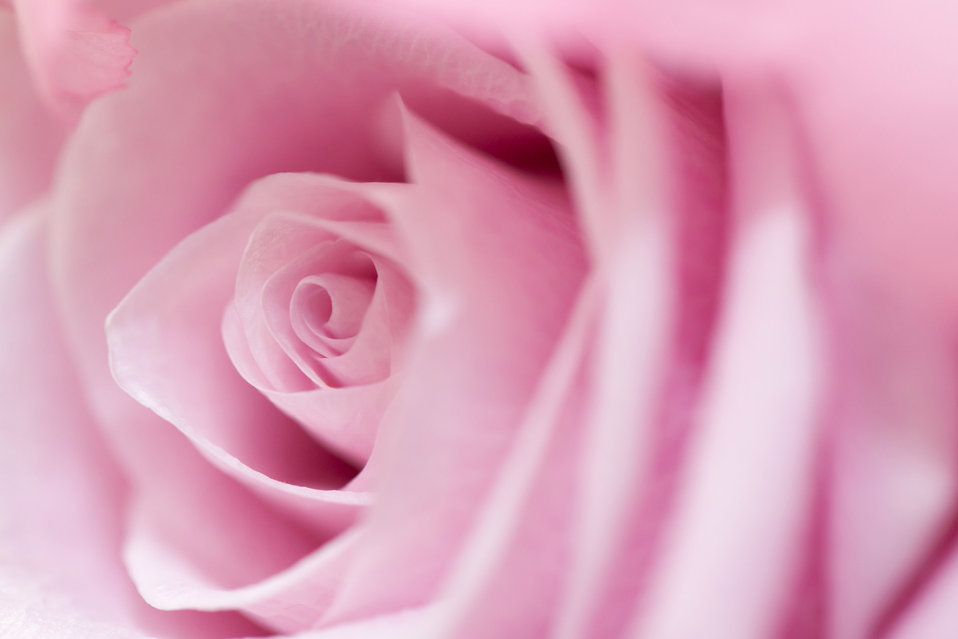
Pink rose

Detail photo of a pink rose.